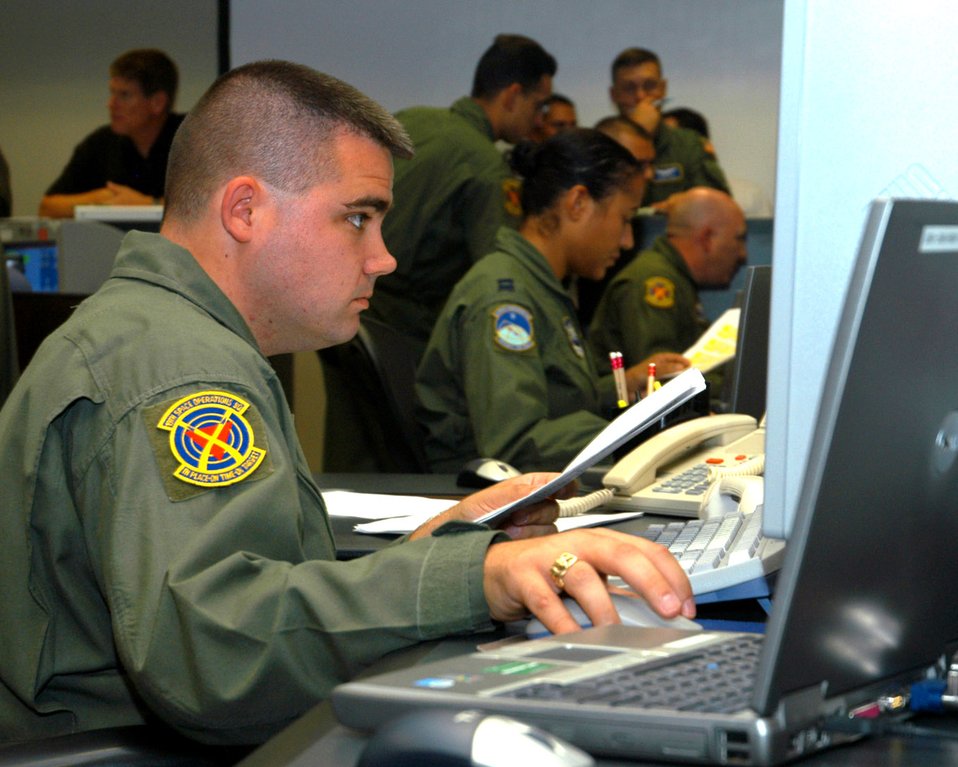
Schriever Airmen transition to new GPS control system

Tech. Sgt. Dana Ammend uploads navigation and timing data Sept. 13 to Global Positioning System satellites using the Architecture Evolution Plan ground control system at Schriever Air Force Base, Colo. The AEP, the first upgrade to the GPS ground control segment in more than 20 years, was declared operational Sept. 14. Sergeant Ammend is a space systems operator with the 19th Space Operations Squadron.